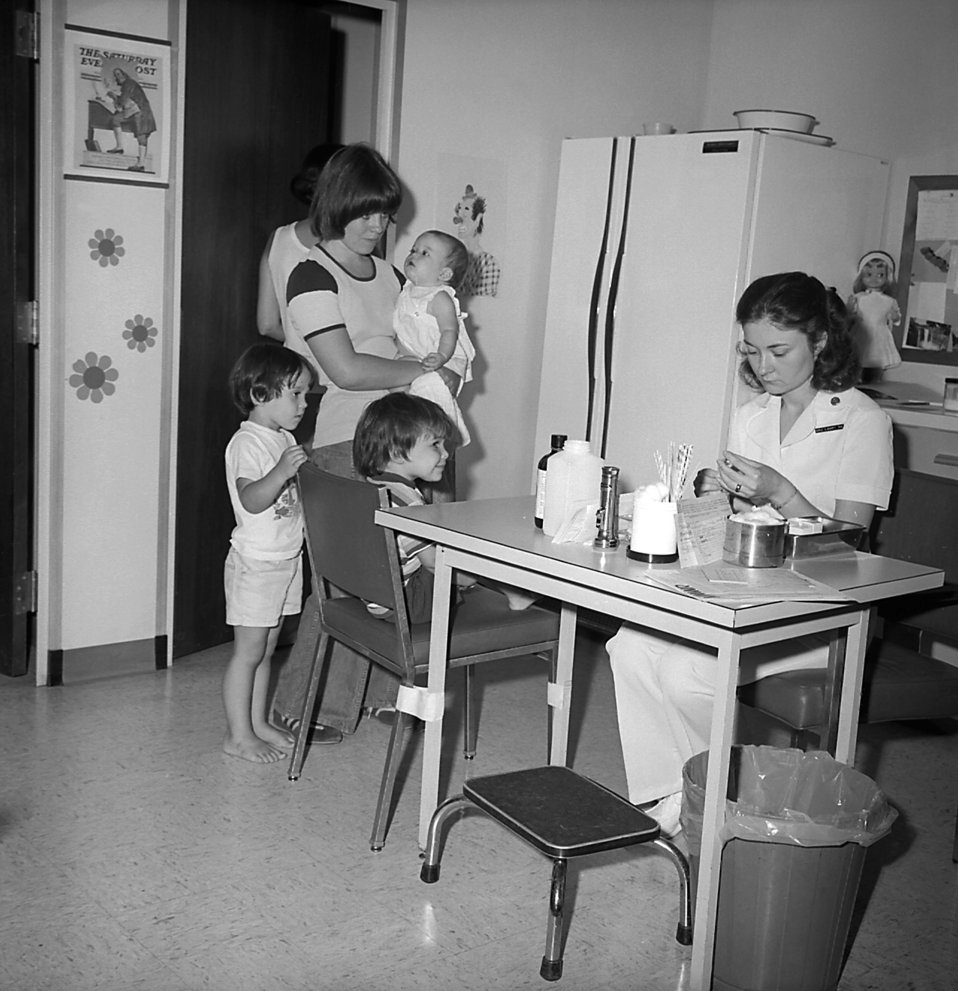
A mother and children in an immunization clinic, 1977, awaiting immunization by a seated nurse preparing the vaccine dosages.